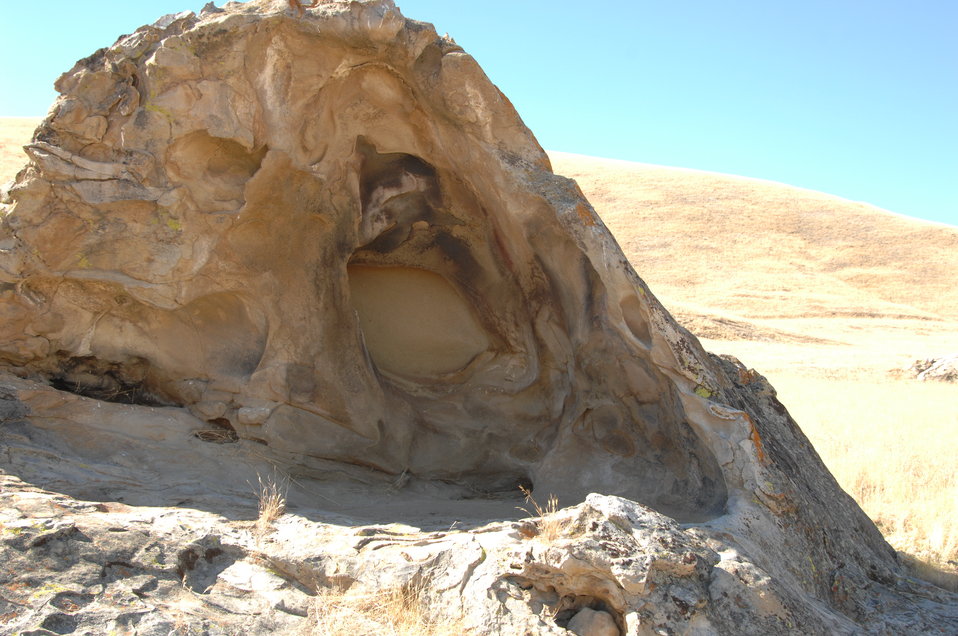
Painted Rock, Formation on the Carrizo Plain 7